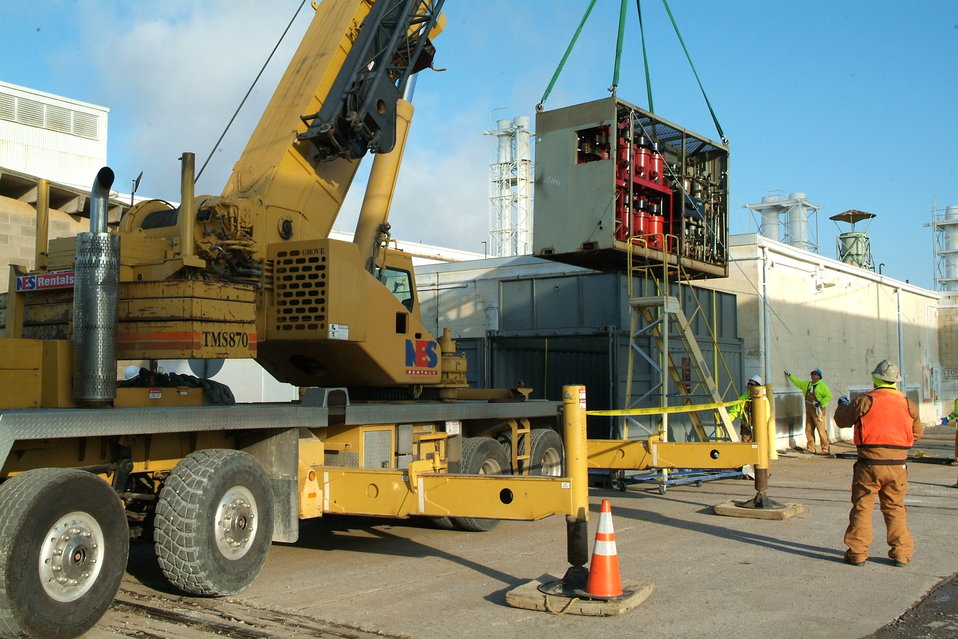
Paducah cleanup

A crane removes electrical equipment from the half-acre eastern third of the Feed Plant.